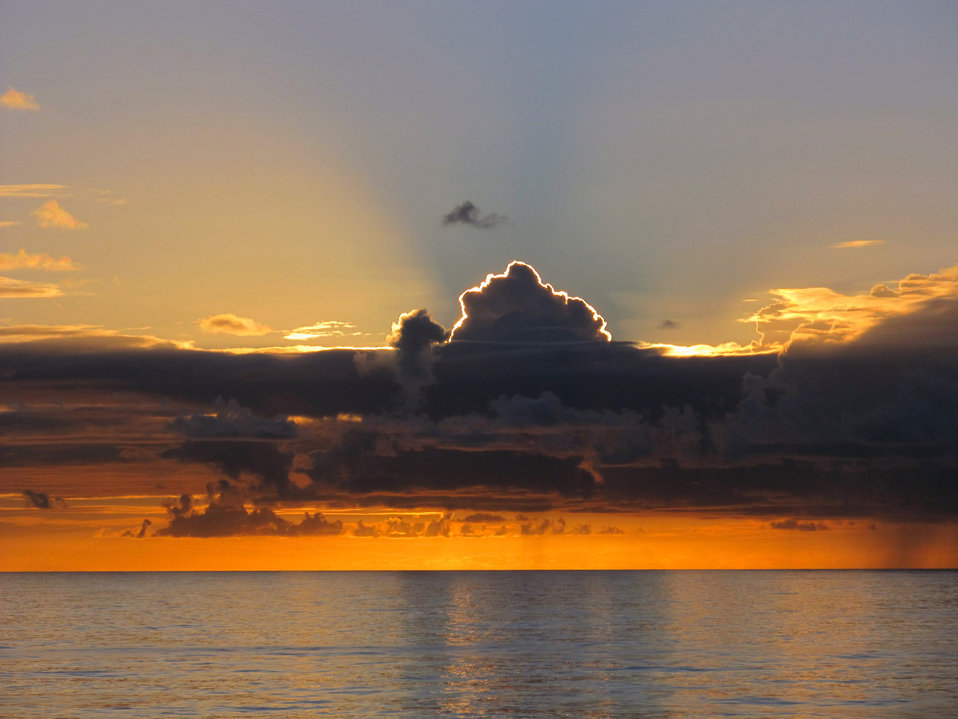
Fire in the sky

A caribbean sunset seems to rain fire from the sky.